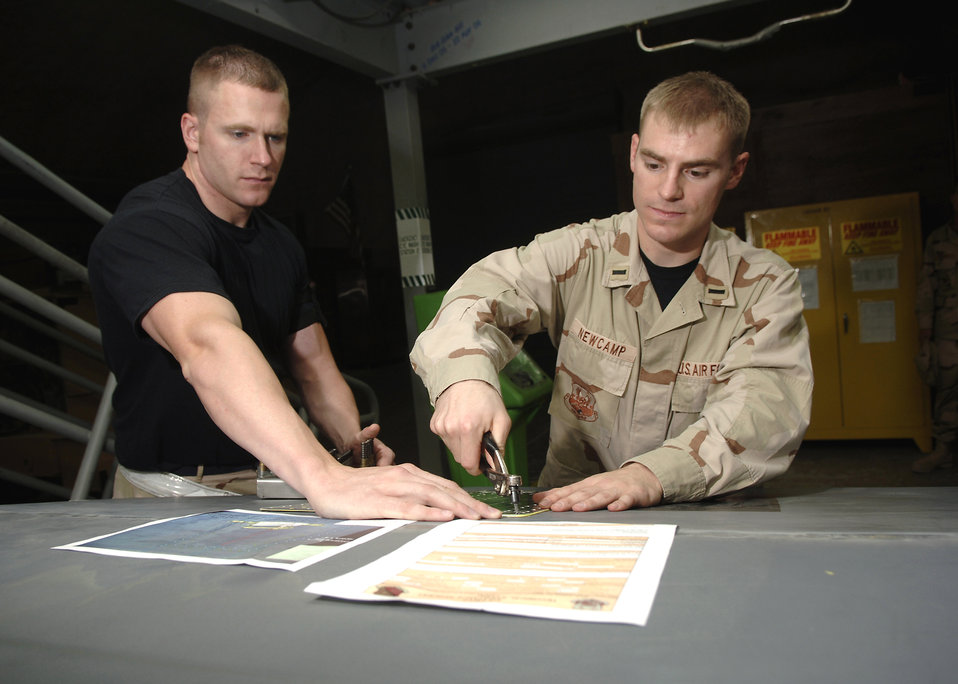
Depot liaison engineers support aircraft maintenance units

Staff Sgt. Shawn Krah (left), an aircraft structural maintenance craftsman with the 379th Expeditionary Maintenance Squadron, discusses one-time flight options for a damaged flap on a B-1 Lancer with 1st Lt. Jeffrey Newcamp, a depot liaison engineer with the 379th Expeditionary Maintenance Operations Squadron.